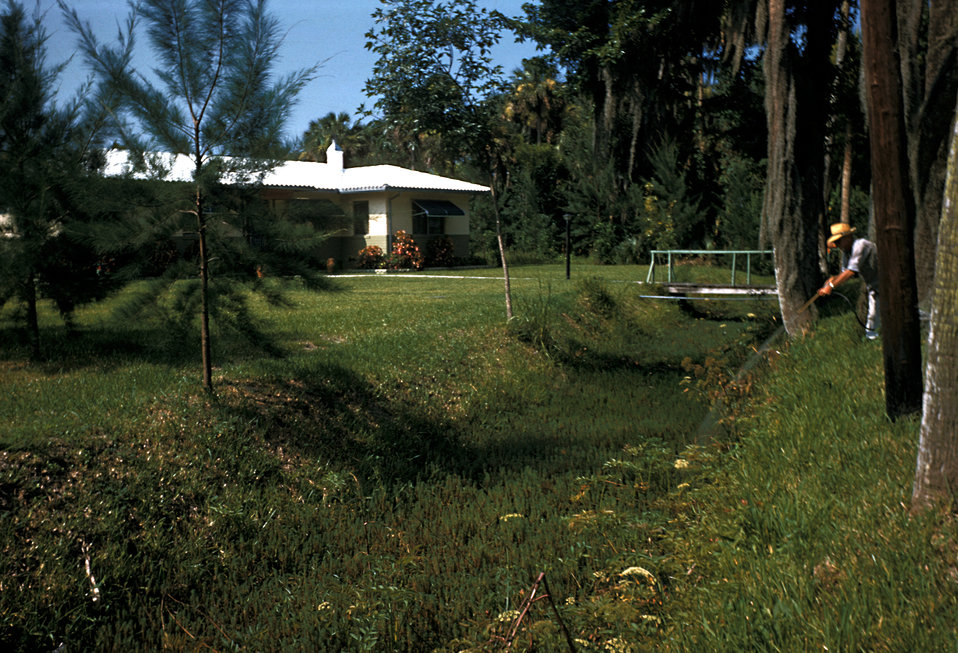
Here domestic mosquitoes are found breeding in this street-side drainage ditch.